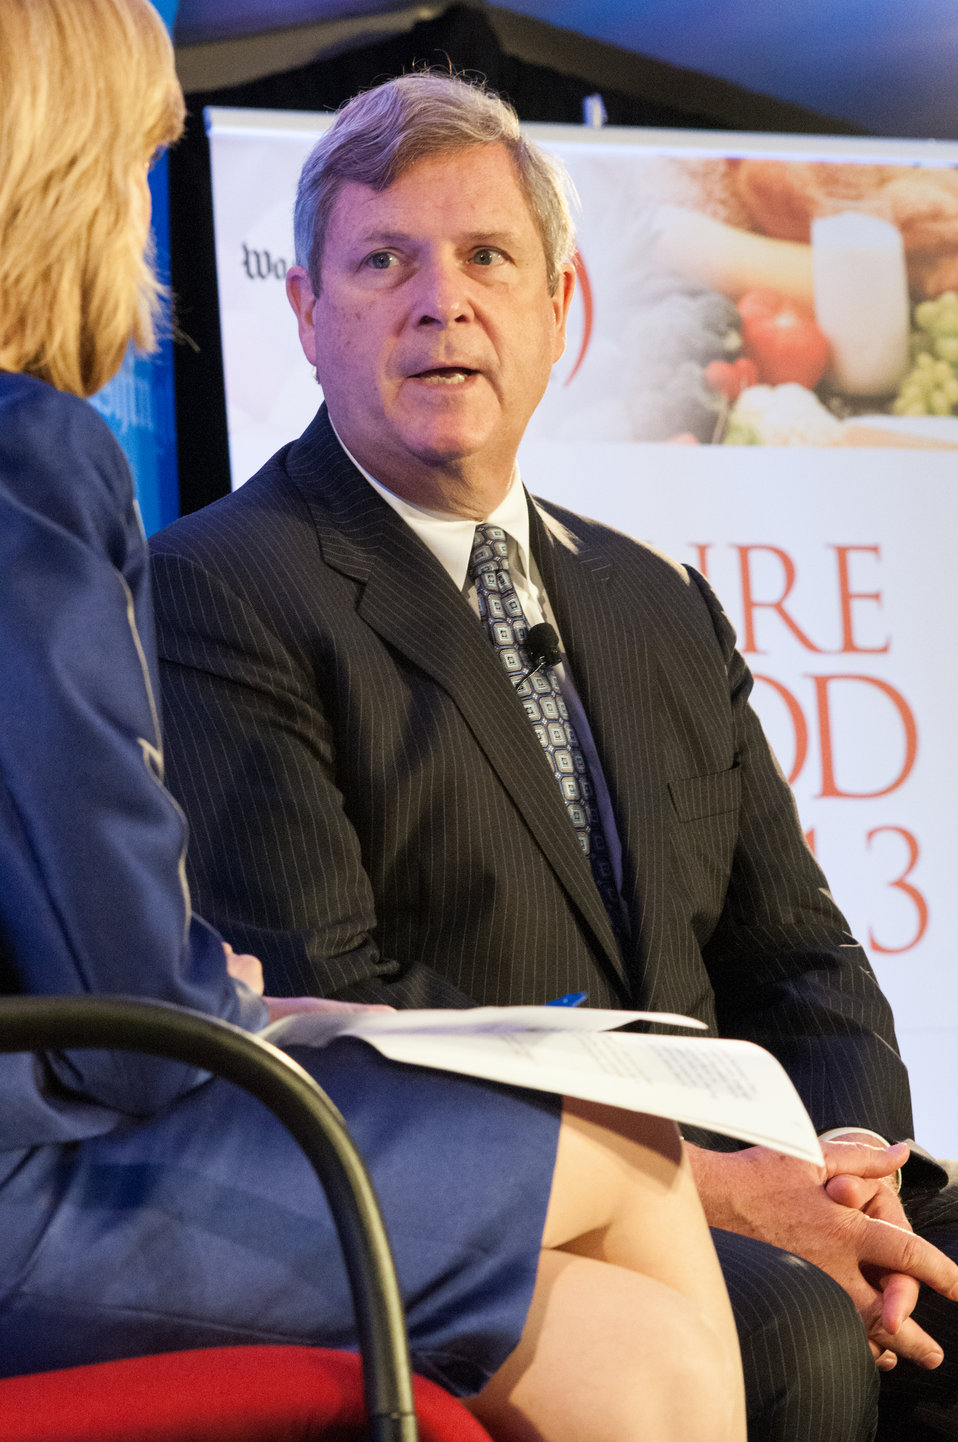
Agriculture Secretary Tom Vilsack and leading agricultural, government and nutrition experts discuss expanding healthy, sustainable food systems during the annual live forum, “Future of Food: Building a Sustainable Food System 2013,” sponsored by the Washington Post in Washington, D.C. on Wednesday, May 22, 2013. The discussion included public-private partnerships, the market’s role in nutrition and the future of agricultural innovation.